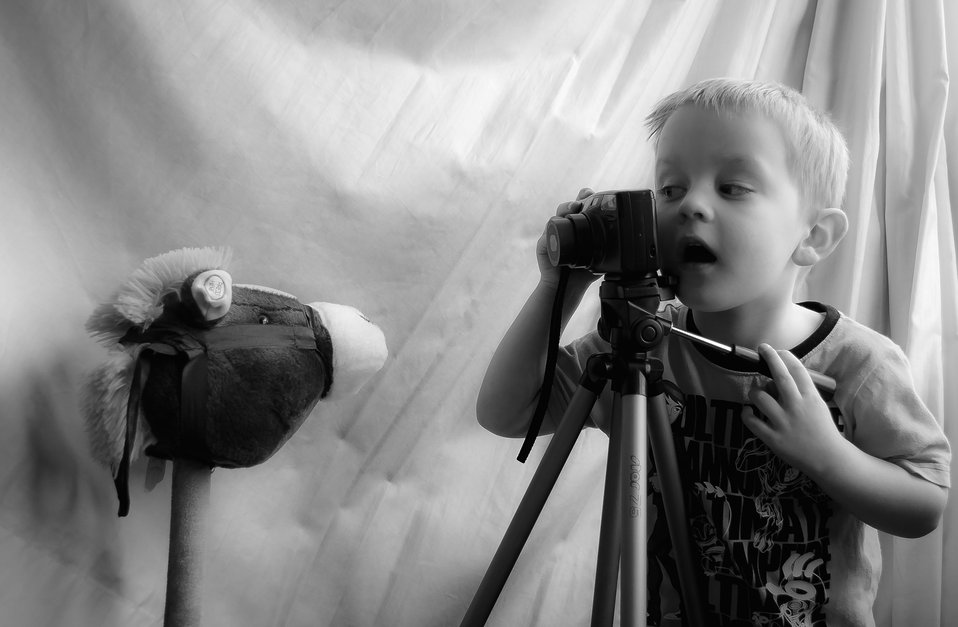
Little photographer.